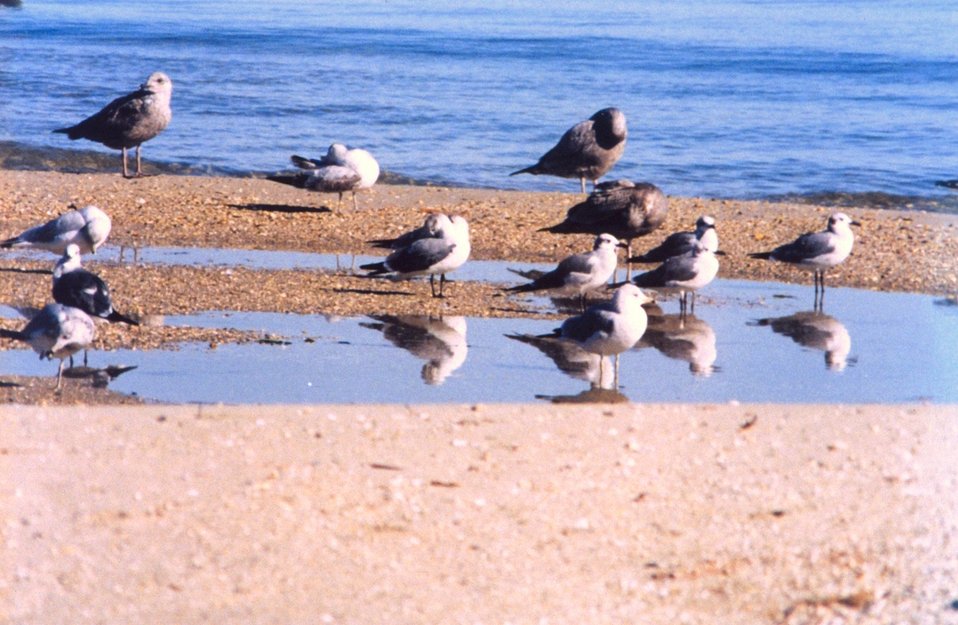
Sea gulls on a Patuxent River beach.